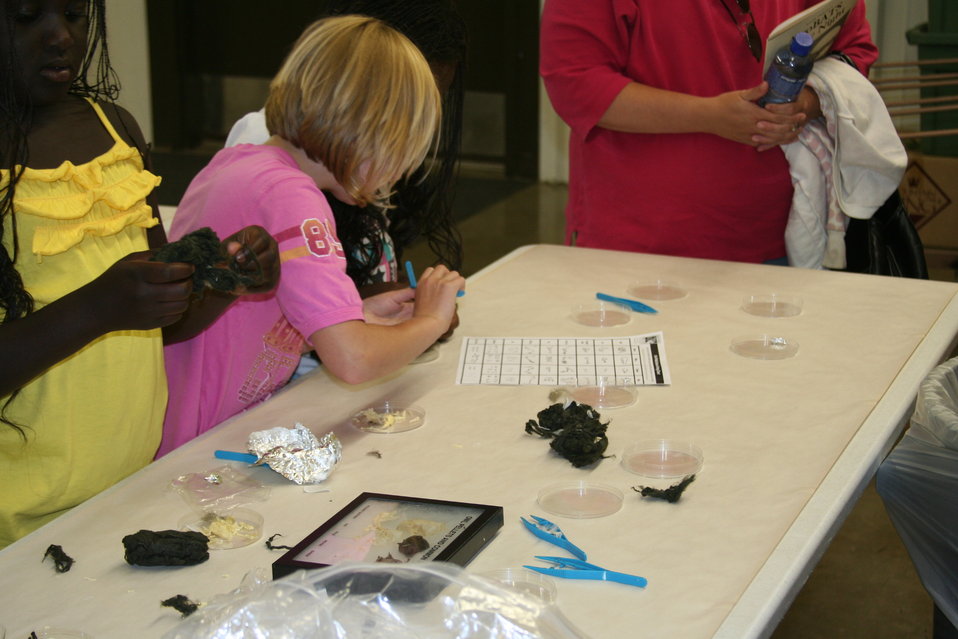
Creatures of the Night 2011